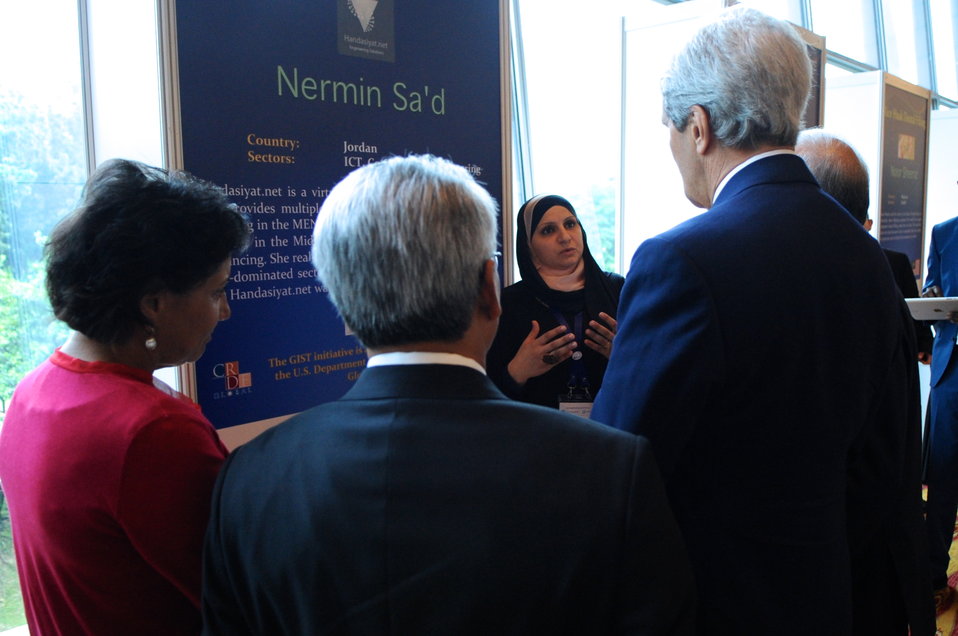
Secretary Kerry Listens To Presentation At Innovation Showcase

U.S. Secretary of State John Kerry, Malaysian Prime Minister Najib Razak, and U.S. Commerce Secretary Penny Pritzker listen to an exhibitor at the Innovation Showcase, held as part of the Global Entrepreneurship Summit in Kuala Lumpur on October 11, 2013.